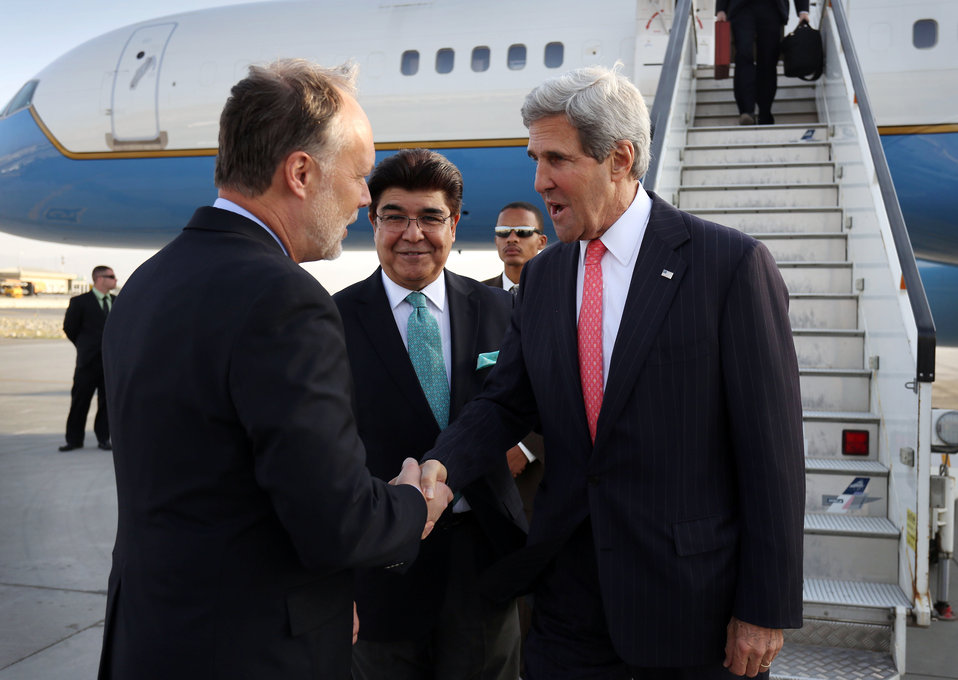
Secretary Kerry Is Greeted By Ambassador Cunningham Upon Arrival in Kabul

U.S. Secretary of State John Kerry is greeted by U.S. Ambassador James B. Cunningham upon arrival in Kabul, Afghanistan, on October 11, 2013. Also pictured is Hamid Sidiq of the Afghan Ministry of Foreign Affairs.